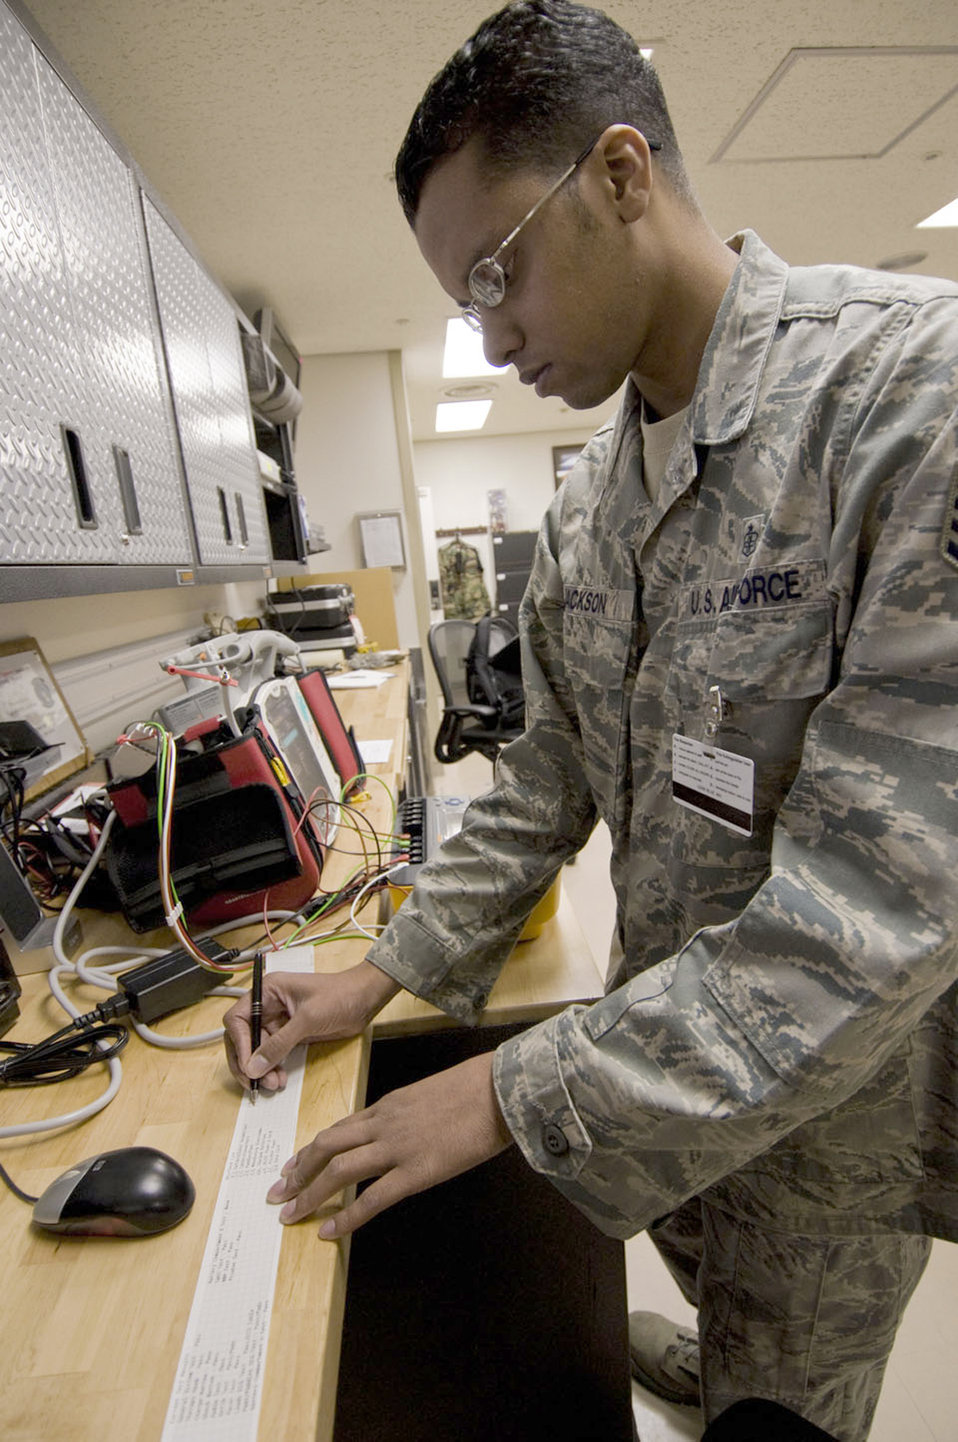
BMETs deliver

Staff Sgt. Hakan Jackson completes an initial inspection of an automatic external defibrillator Sept. 21, 2010, at the hospital at Misawa Air Base, Japan. Sergeant Jackson is a 35th Medical Support Squadron biomedical equipment technician.